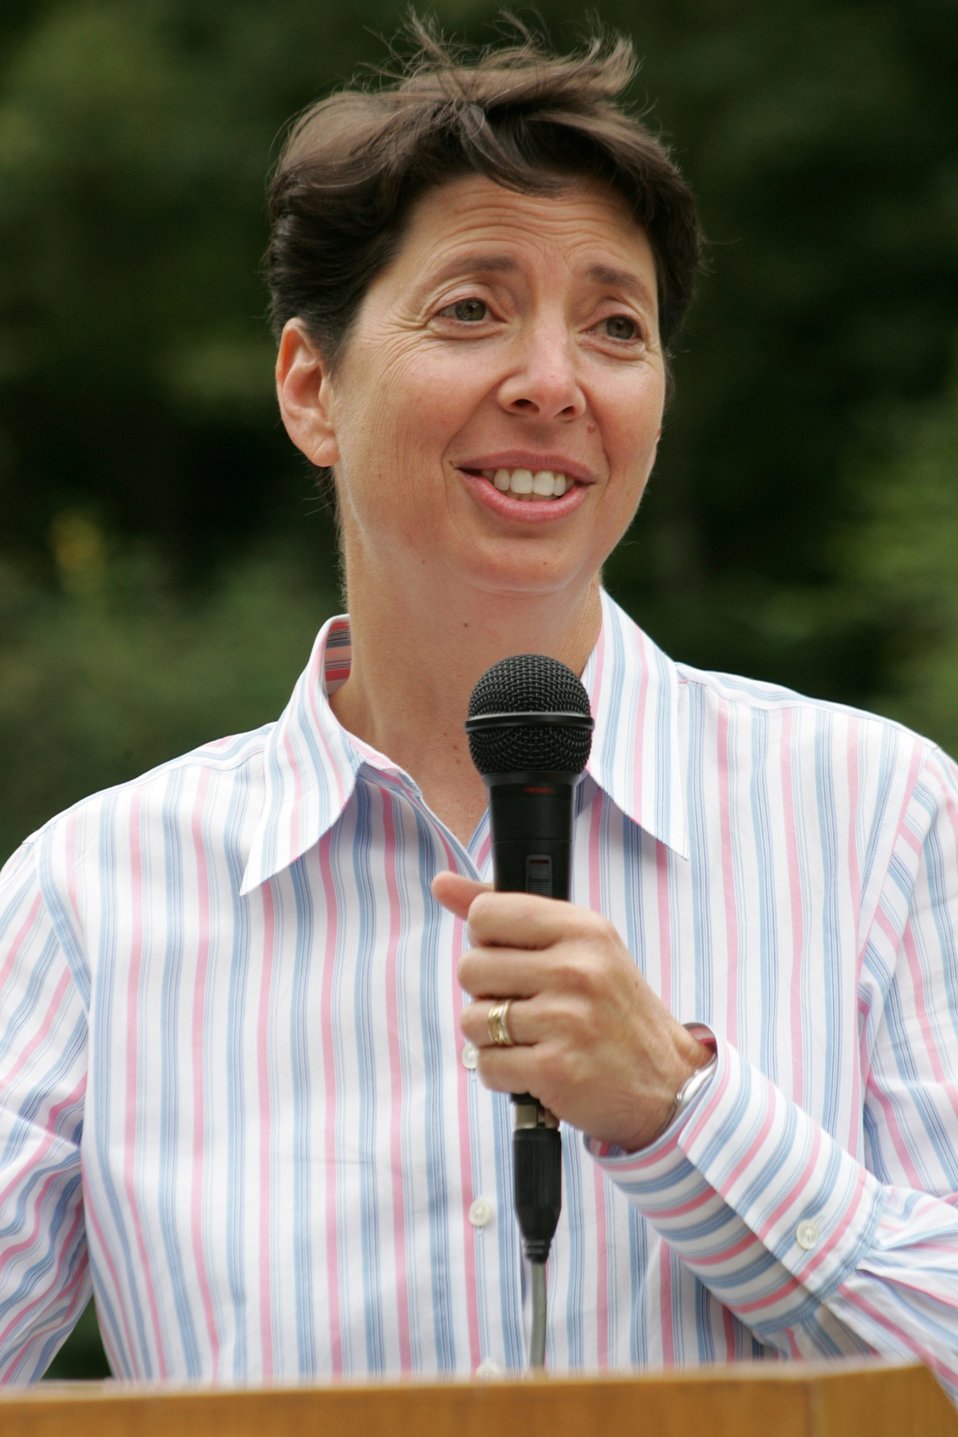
Sue Doroff, Vice President of the Western Rivers Conservancy, speaks during the Four C;s Award Ceremony at Little Sandy Dam.